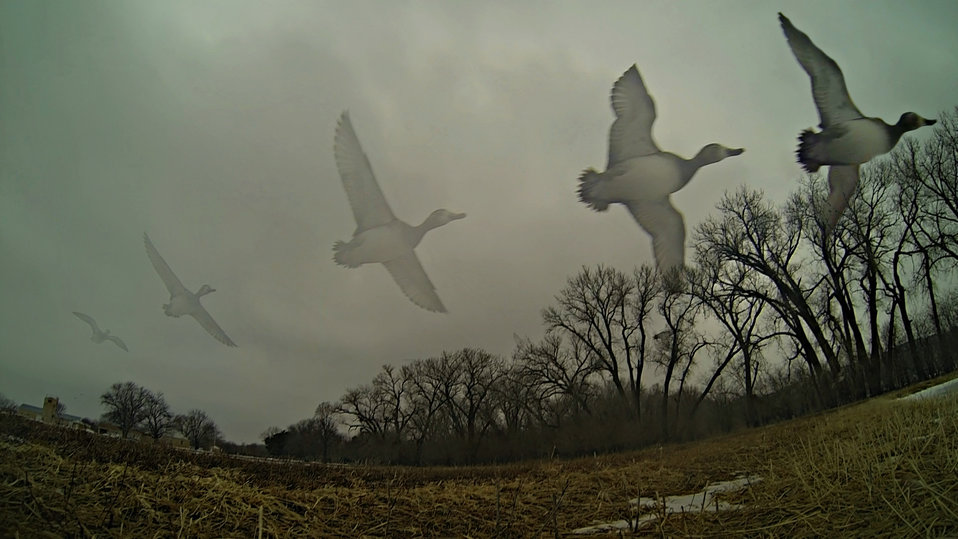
Redhead Drake

The waterfowl are really moving in at the hatchery! Here is a sequence of pictures that captured a redhead drake preparing to land on our bass pond.